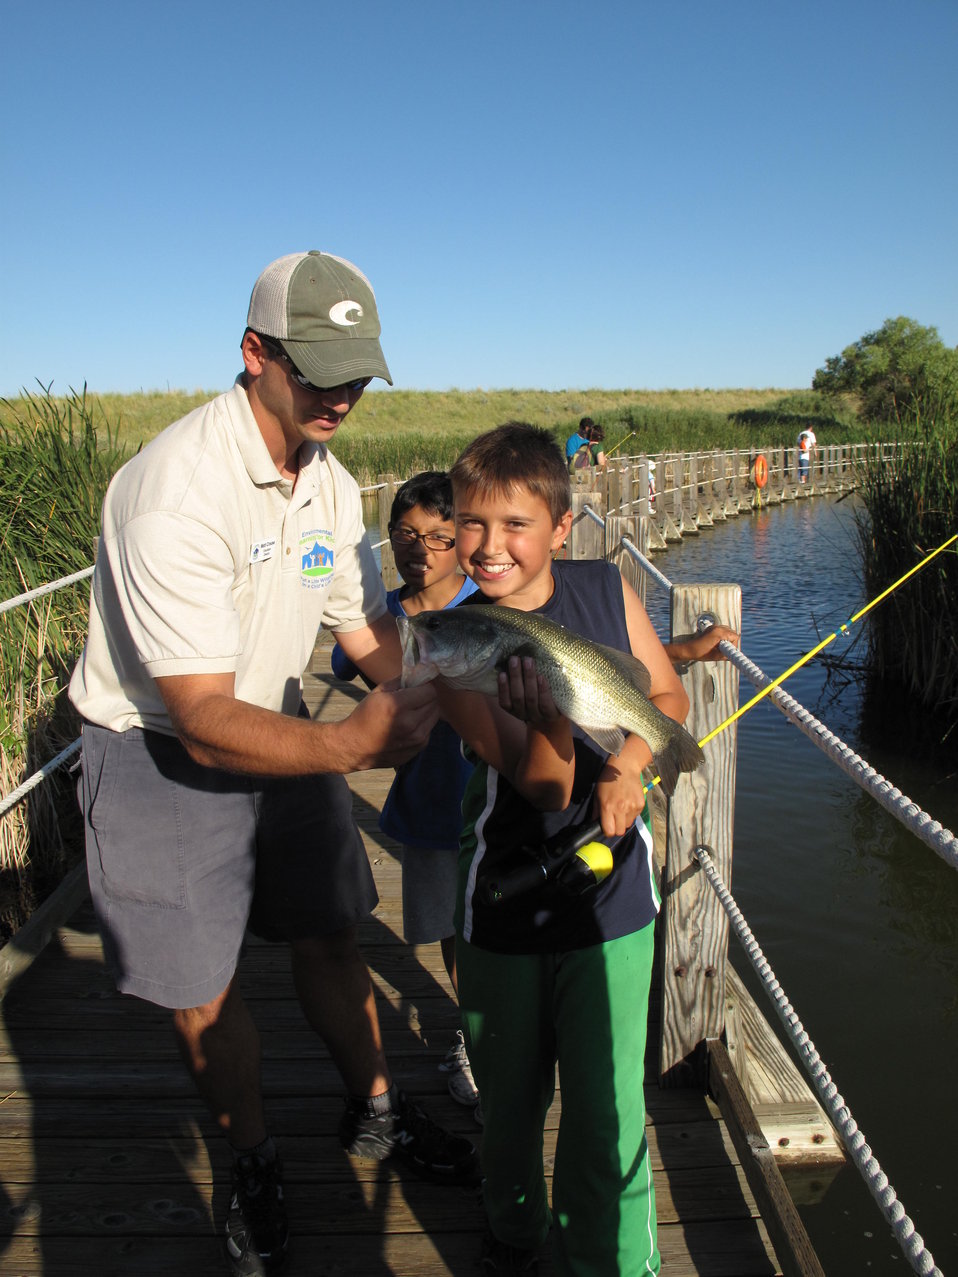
Posing with Catch

Fishing trip at the Rocky Mountain Arsenal.